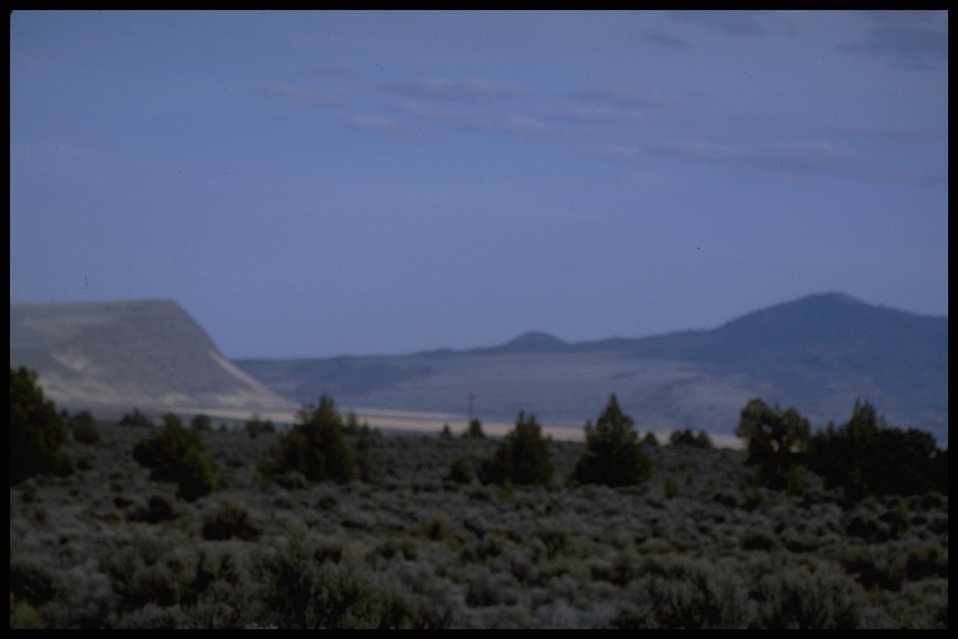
Lakeview District, Christmas Valley Area.